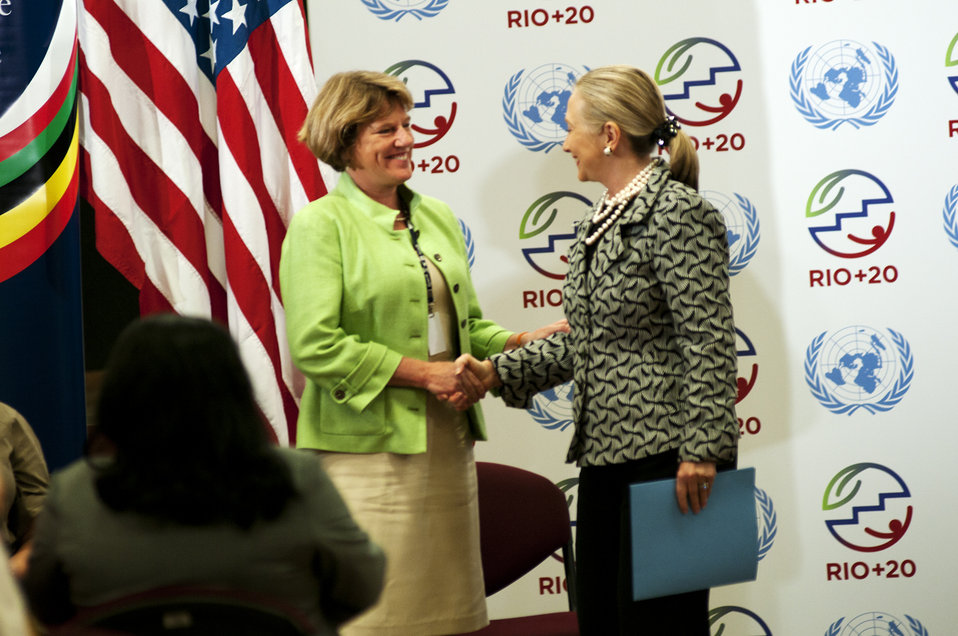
Secretary Clinton Shakes Hands With OPIC President and CEO Littlefield

U.S. Secretary of State Hillary Rodham Clinton shakes hands with Overseas Private Investment Corporation (OPIC) President and CEO Elizabeth Littlefield in Rio de Janeiro, Brazil during the Rio 20 Conference on June 22, 2012.